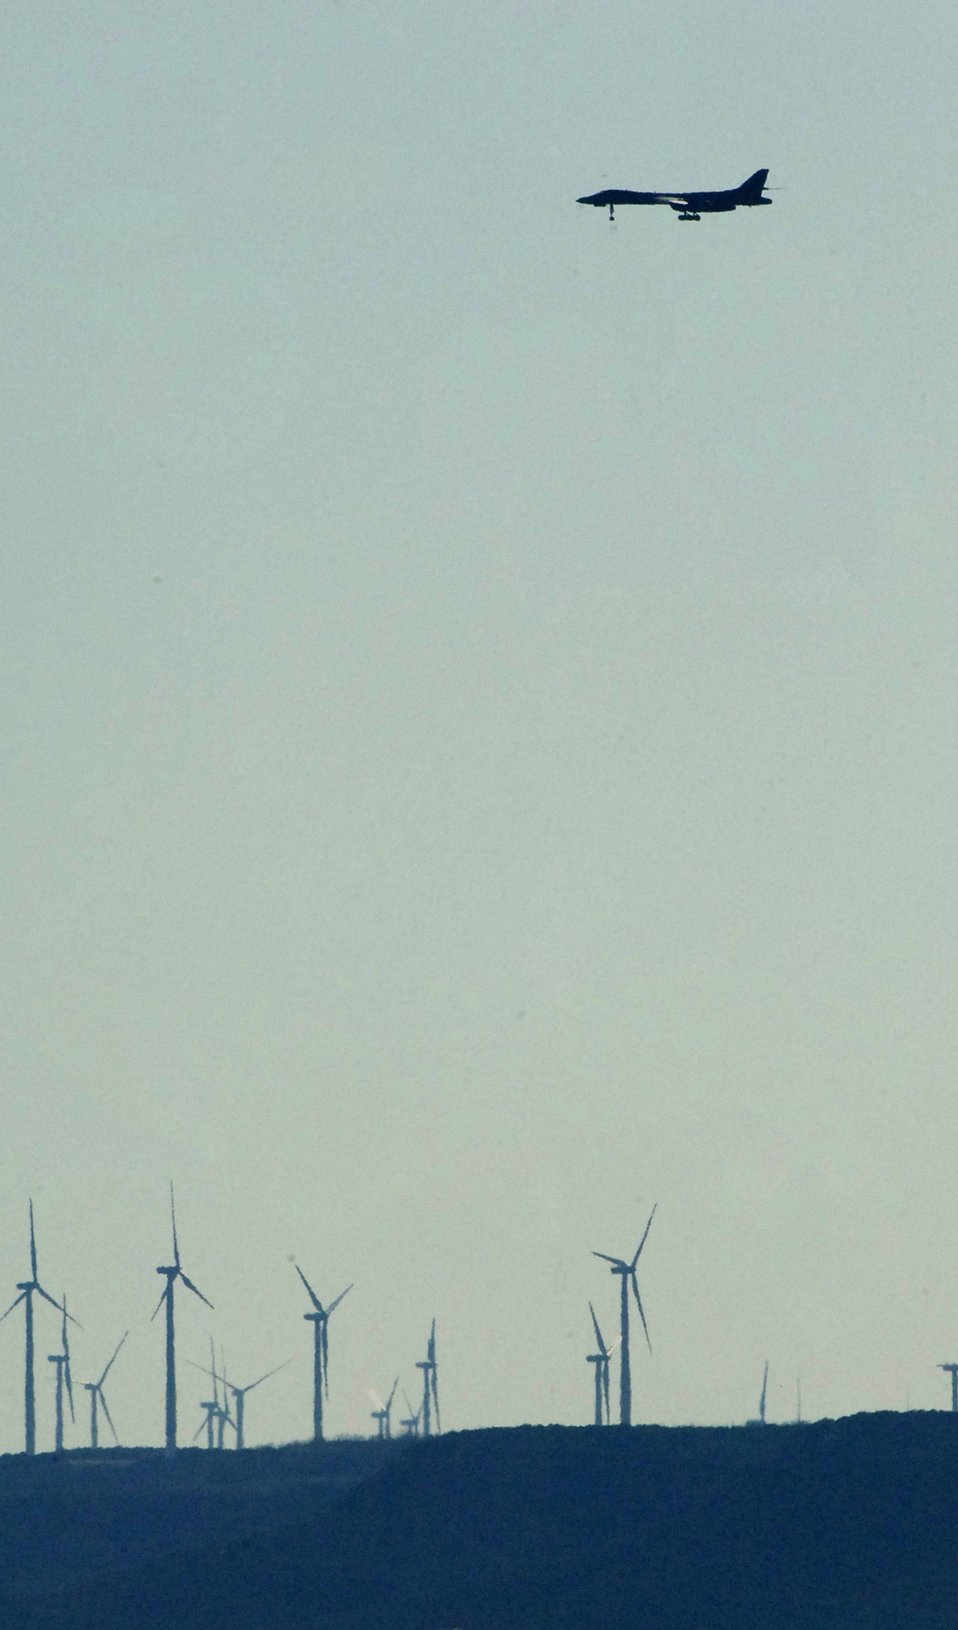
B-1B achieves first supersonic flight using synthetic fuel

A B-1B Lancer flies over the wind farms before landing March 19 at Dyess Air Force Base, Texas. The B-1B was the first aircraft to fly supersonic speeds using a 50/50 blend of synthetic and petroleum fuel over the White Sands Missile Range airspace in south-central New Mexico, but took off from Dyess AFB.